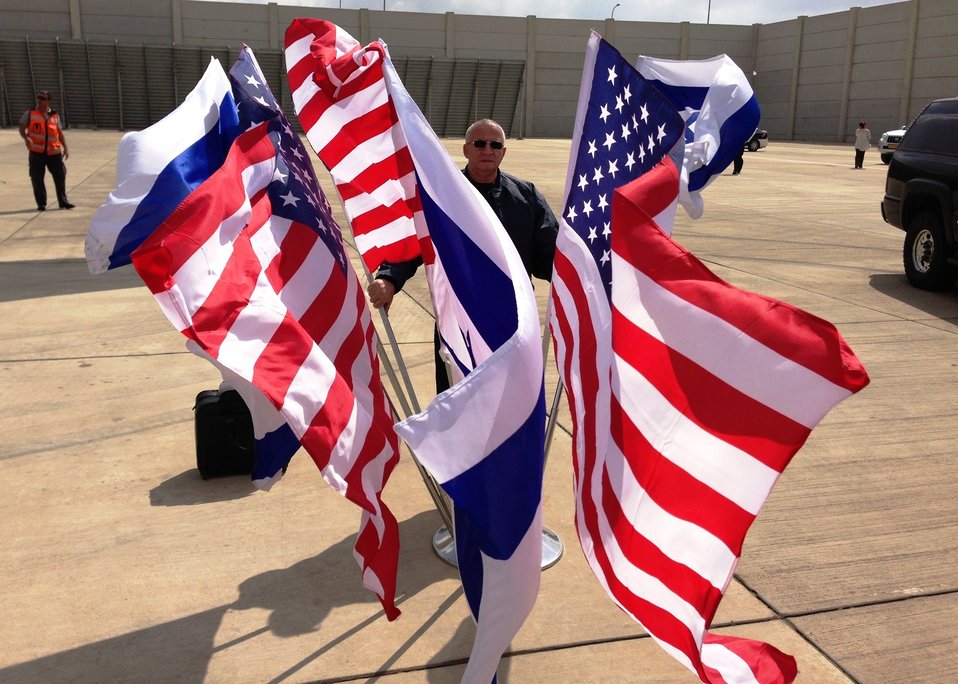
Flags flutter in the wind at Ben Gurion International Airport in Tel Aviv, Israel, on April 9, 2013.